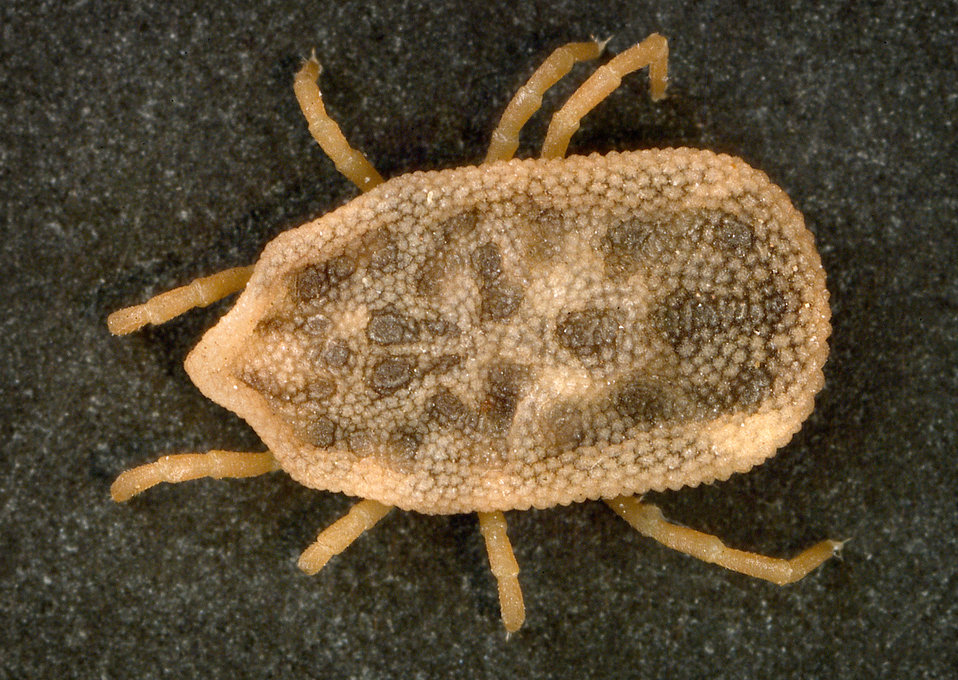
This is a dorsal view of the 'soft tick' Carios kelleyi, formerly Ornithodoros kelleyi, or the 'Bat Tick'.